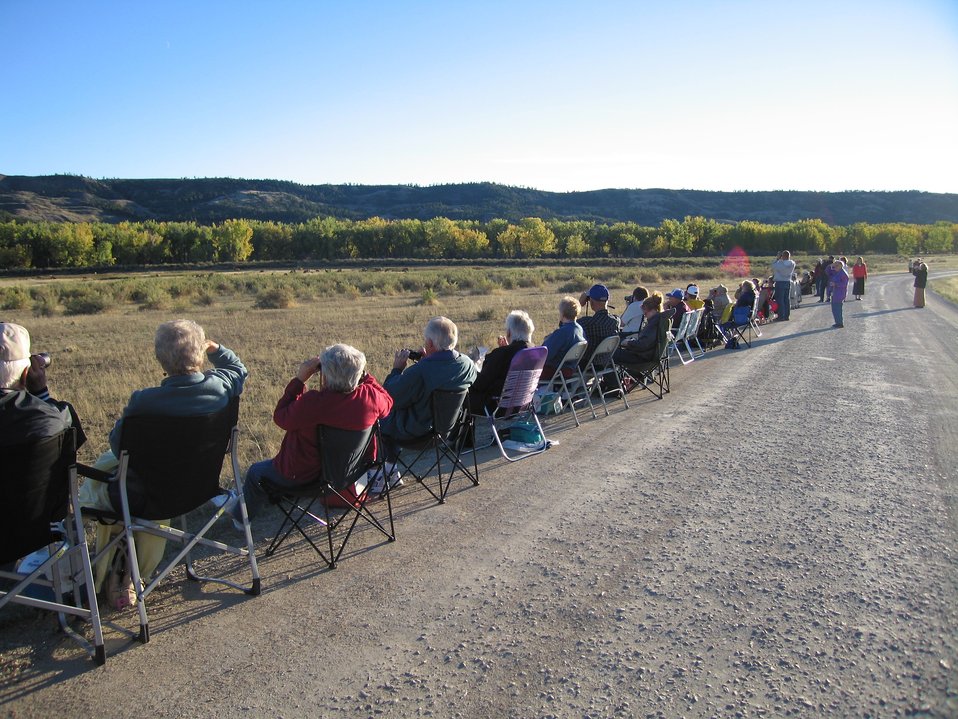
Viewing an Elk Herd

Townspeople line up to view the elk herd at Charles M. Russell National Wildlife Refuge in Montana.